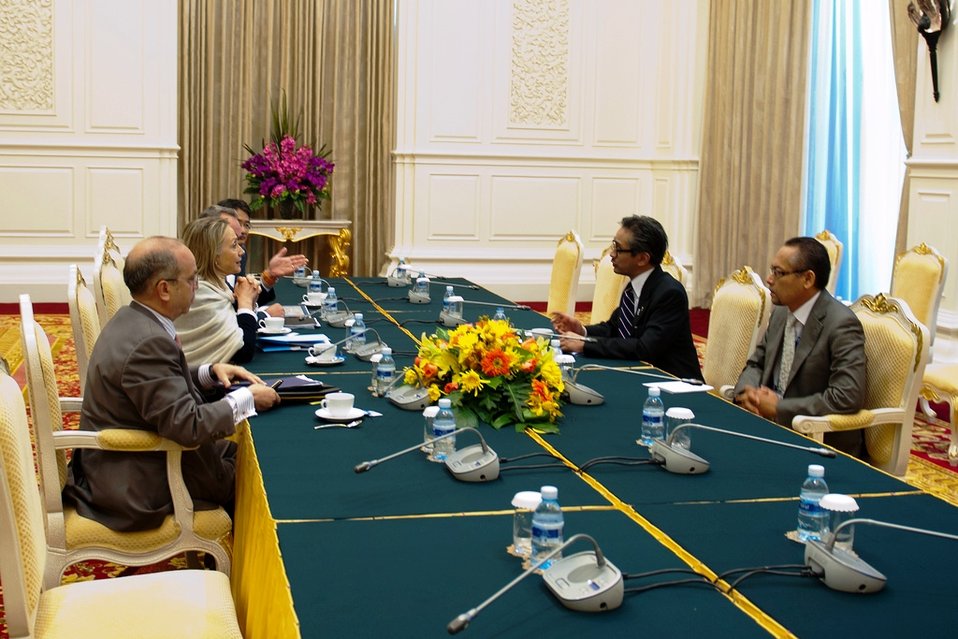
Secretary Clinton Meets With Indonesian Foreign Minister Natalegawa

U.S. Secretary of State Hillary Rodham Clinton meets with Indonesian Foreign Minister Marty Natalegawa in Phnom Penh, Cambodia, on July 12, 2012.